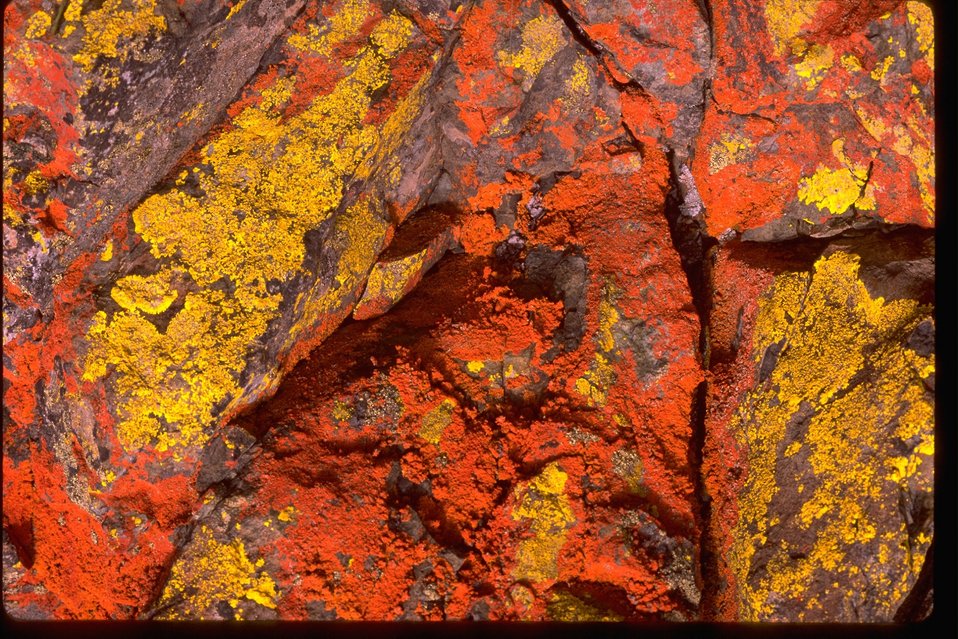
Lichen rockscape